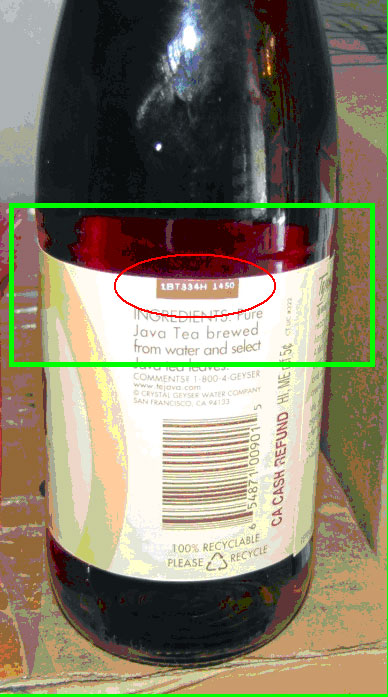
RECALLED - Iced Tea

December 9, 2011 - Product Recall - Voluntarily Recall of Limited Quantity of 12 oz Tejava® Premium Iced Tea.